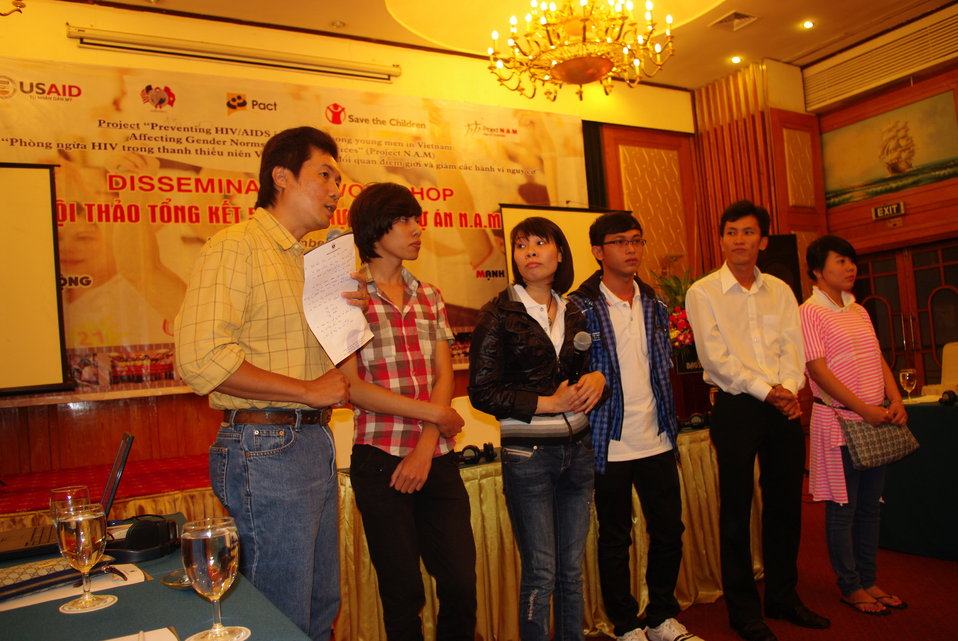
USAID Supports HIV Awareness among Street Youth and Young Men

Trainers and peer educators tell their stories on November 29, 2011, in Hanoi, Vietnam